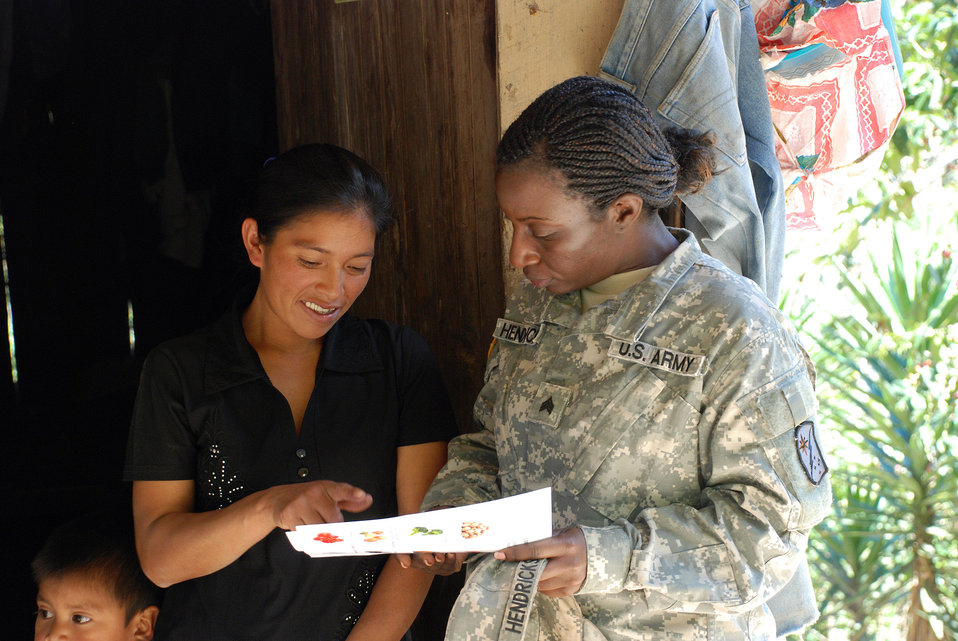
Medical team hikes into Honduran mountains to care for children

U.S. Army Sgt. Onika Hendricks discusses a variety of locally available foods known to be high in iron and other essential nutrients with a mother living in the remote village of Marcala, Honduras. A team of 16 medical workers and dieticians traveled there from the United States to take part in a pediatric nutrition medical readiness training exercise. The team partnered with specialists from the Honduran Ministry of Health and the medical element of Joint Task Force-Bravo, based at Soto Cano Air Base, Honduras.